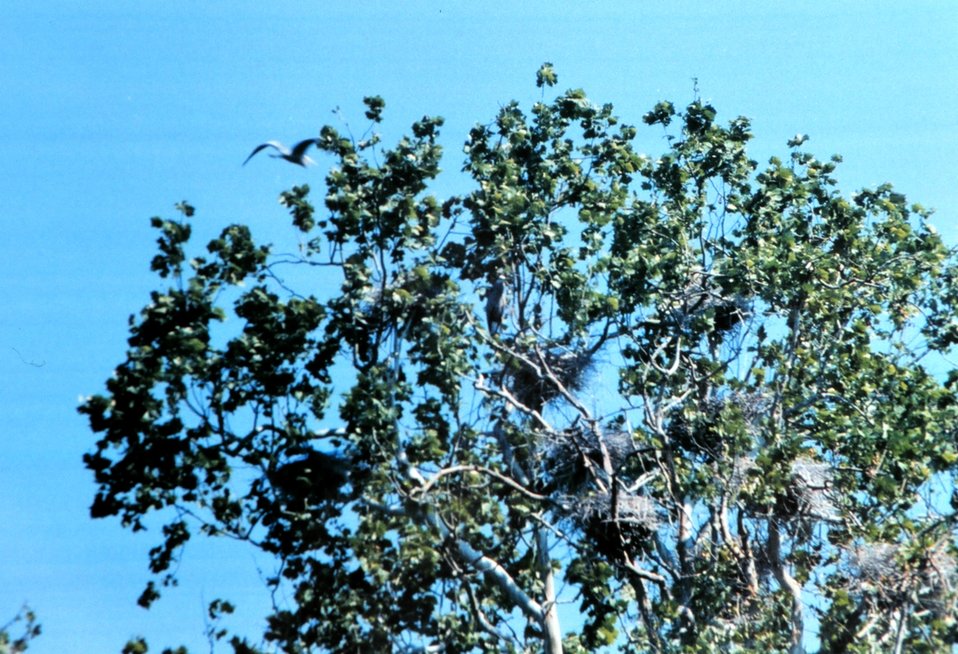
A Patuxent River Great Blue Heron nesting site, or 'heronry.'